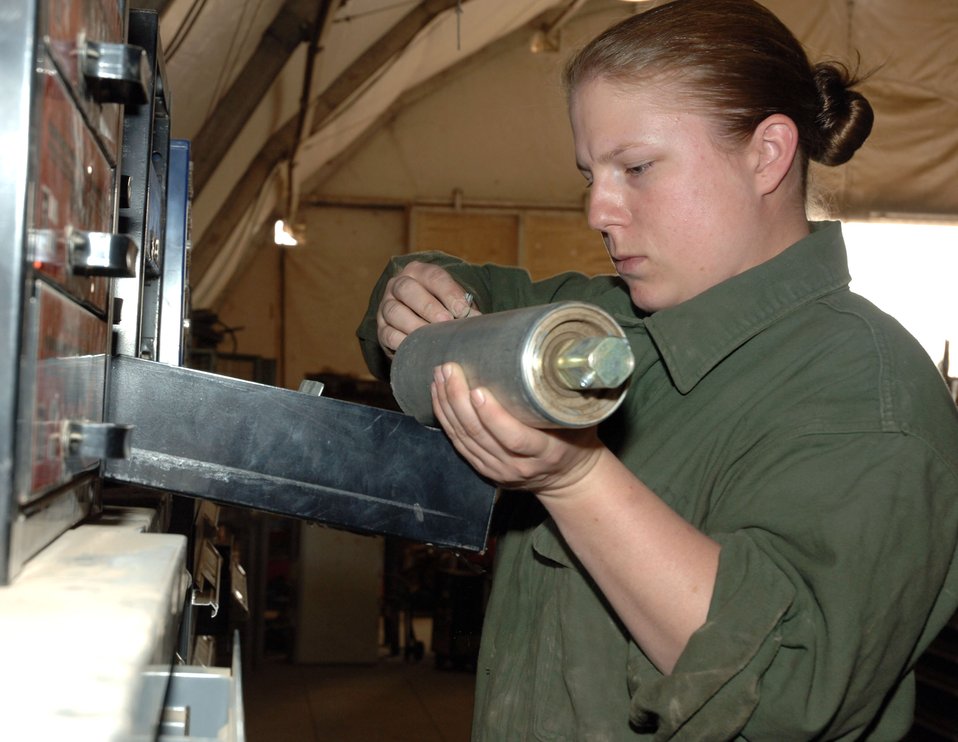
Mechanics keep fleet rolling through dust, mud

Staff Sgt. Jamie Thompson looks for a part for a K-loader roller at Sather Air Base, Iraq, on Monday, May 1, 2006. She is a mechanic with the 447th Expeditionary Logistics Readiness Squadron vehicle maintenance flight.